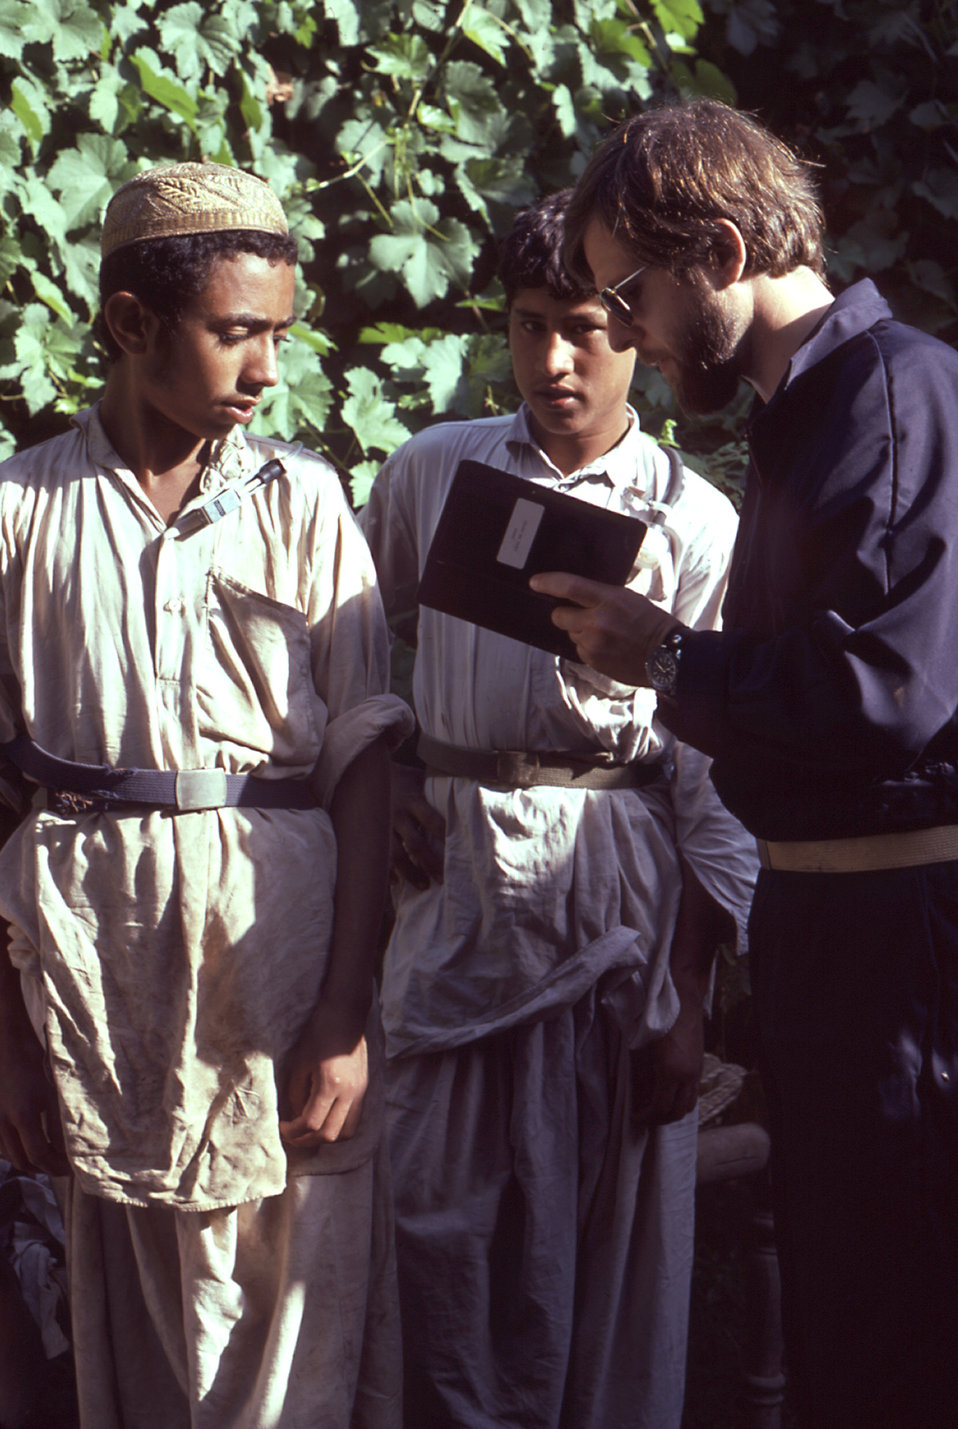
These malaria control workers who'd been spraying malathion to combat mosquito populations were tested for poison exposure.